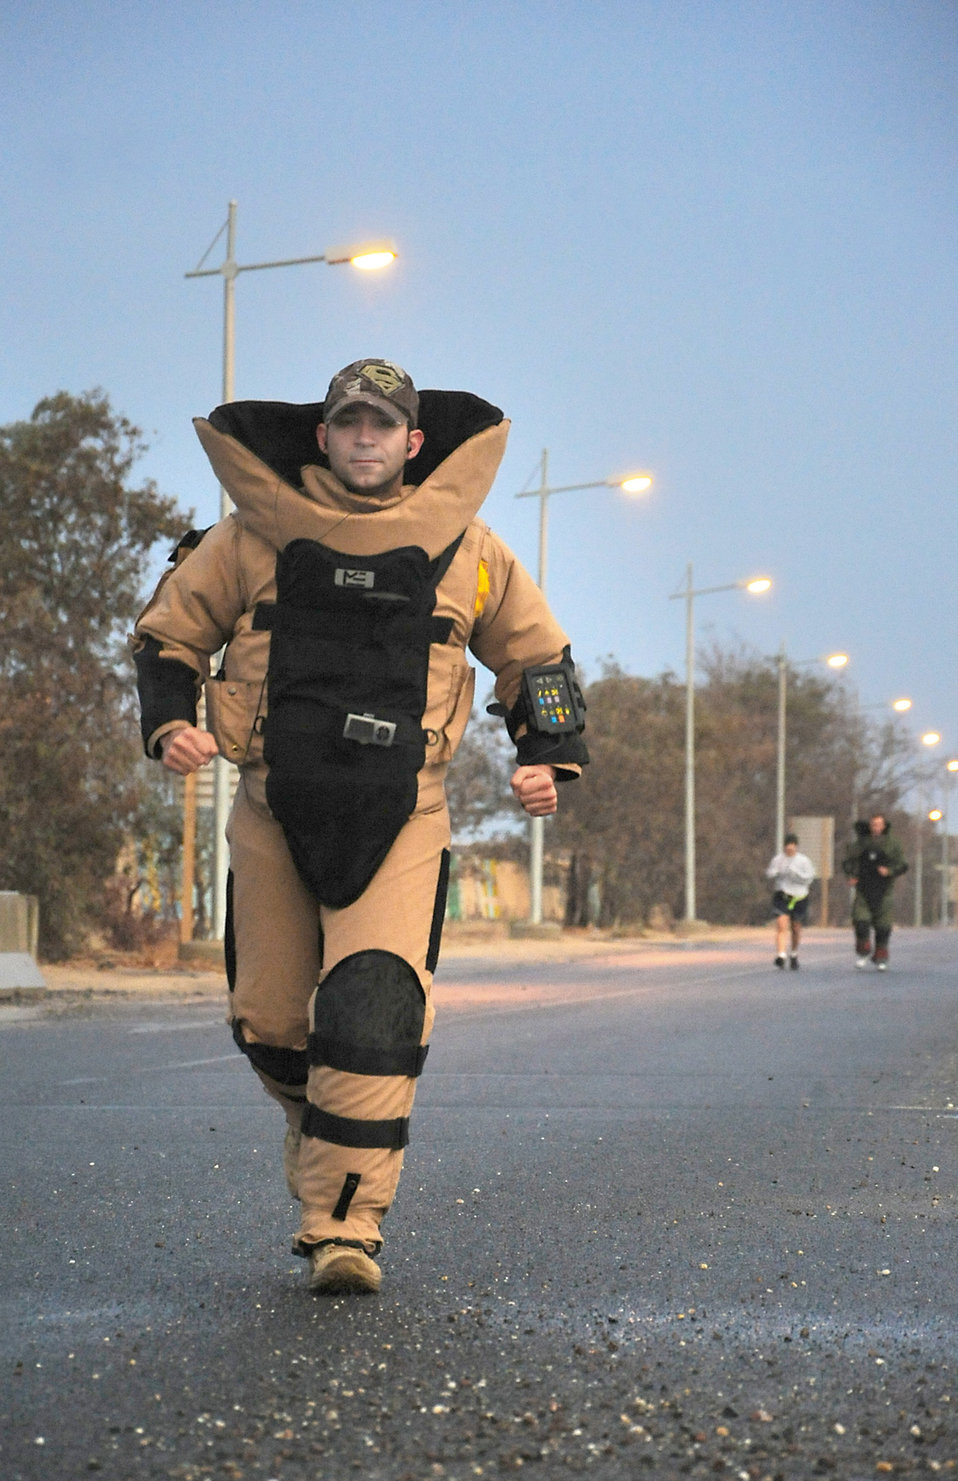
Southwest Asia fun run

Staff Sgt. David Bernal runs in his bomb suit during the explosive ordnance disposal fun run Dec. 31, 2010, at an air base in Southwest Asia. Sergeant Bernal is an EOD journeyman with the 386th Expeditionary Civil Engineer Squadron.